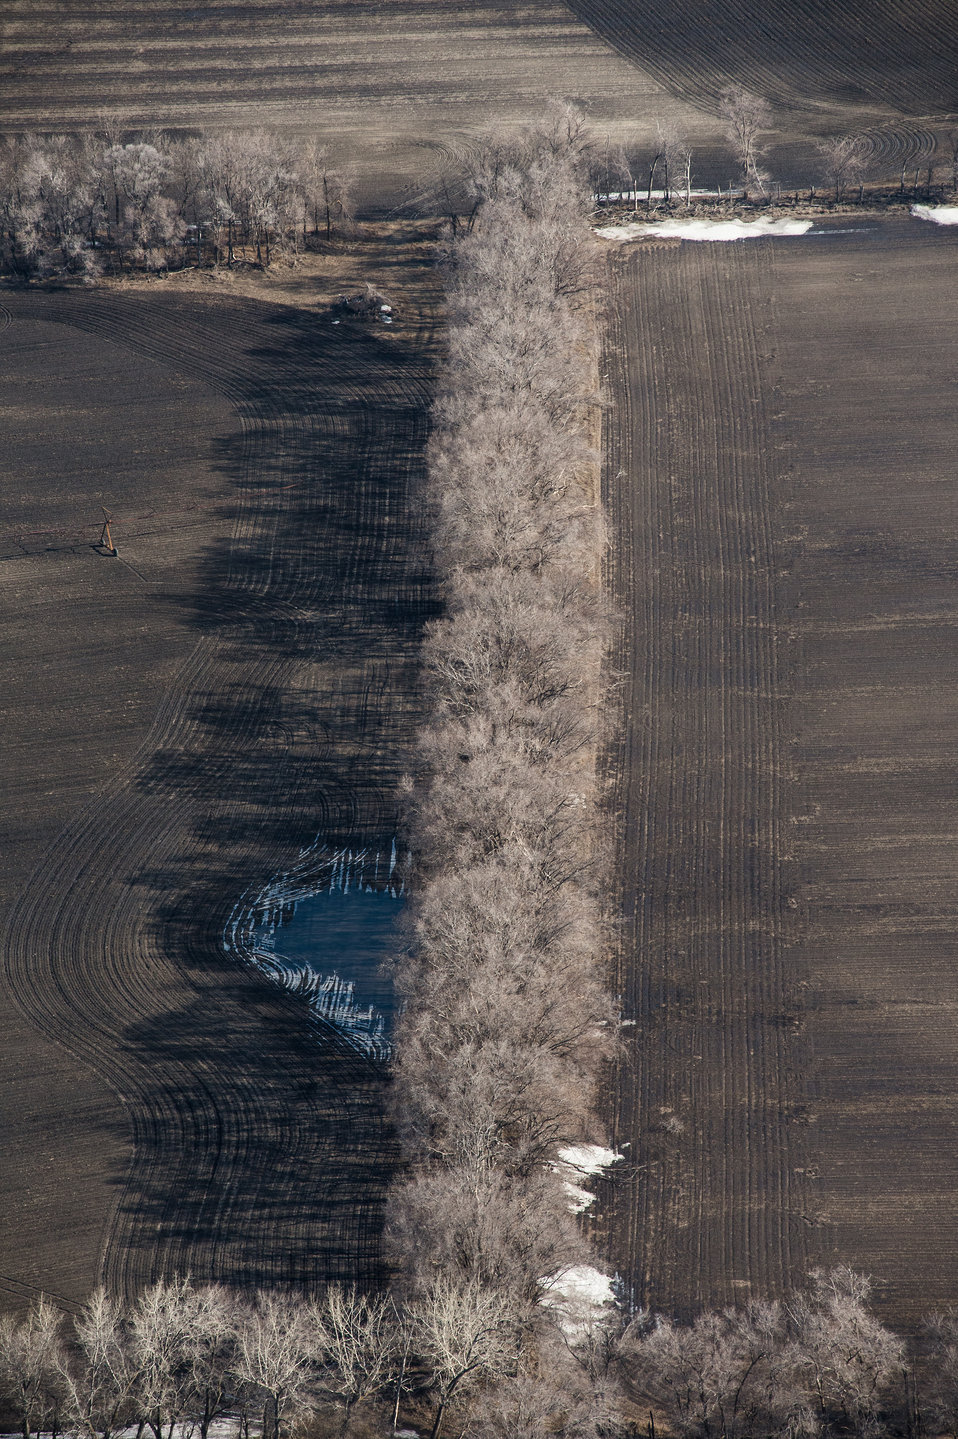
Tree rows reduce topsoil wind erosion in Grand Forks County, ND, on Wednesday, May 1, 2013. To learn about the Red River Basin Initiative, see www.mn.nrcs.usda.gov/news/features13/RRBI.html USDA Photo by Lance Cheung.